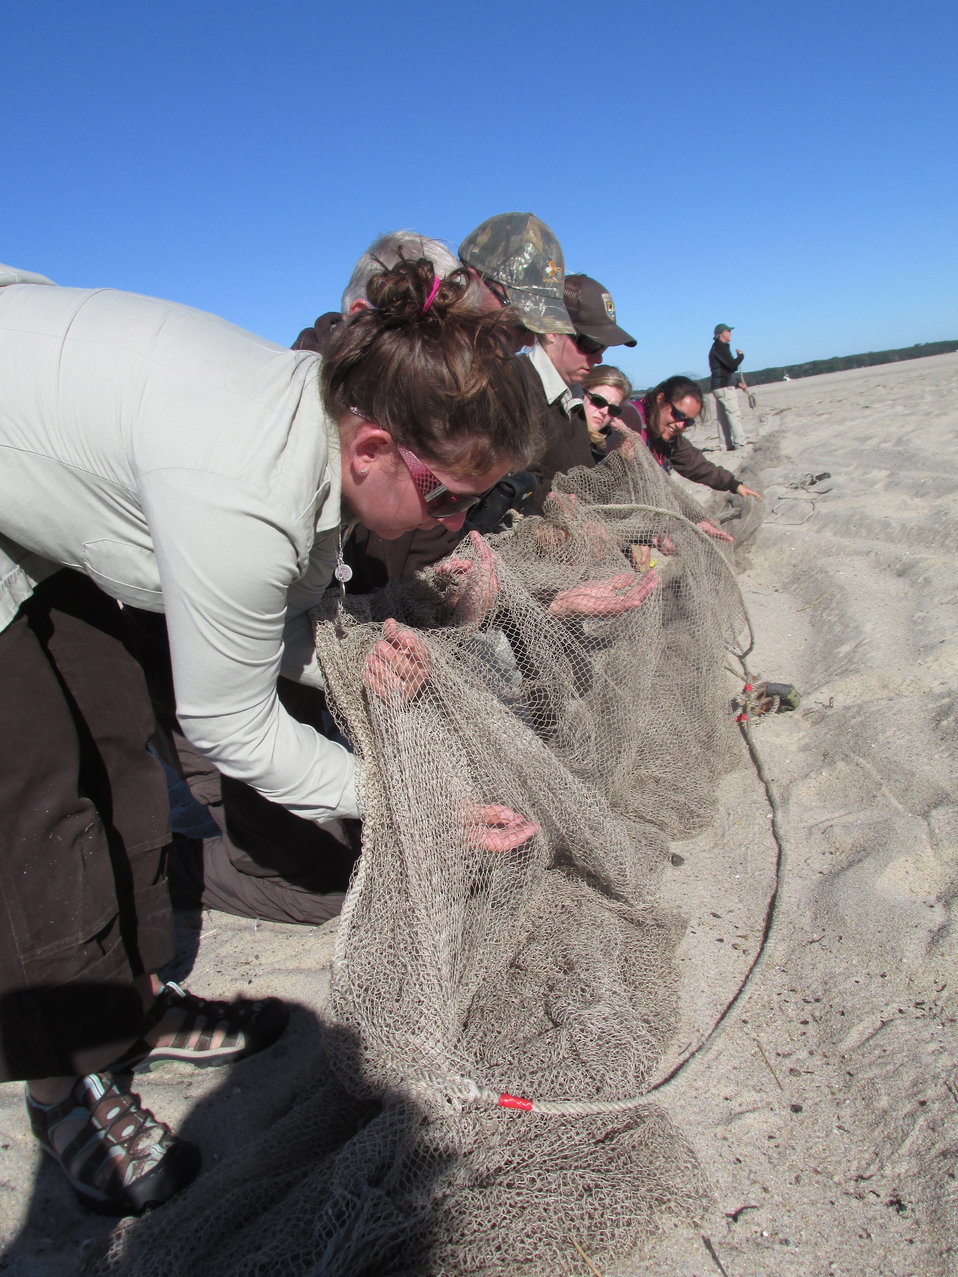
Red knot cannon netting in Cape Cod

The team, with biologist Stephanie Koch at the front, furls the net. Picture a row of people, arms held out, a long net draped across their arms. With hands at the top of the net, we gently pull and gather the net like a fan.